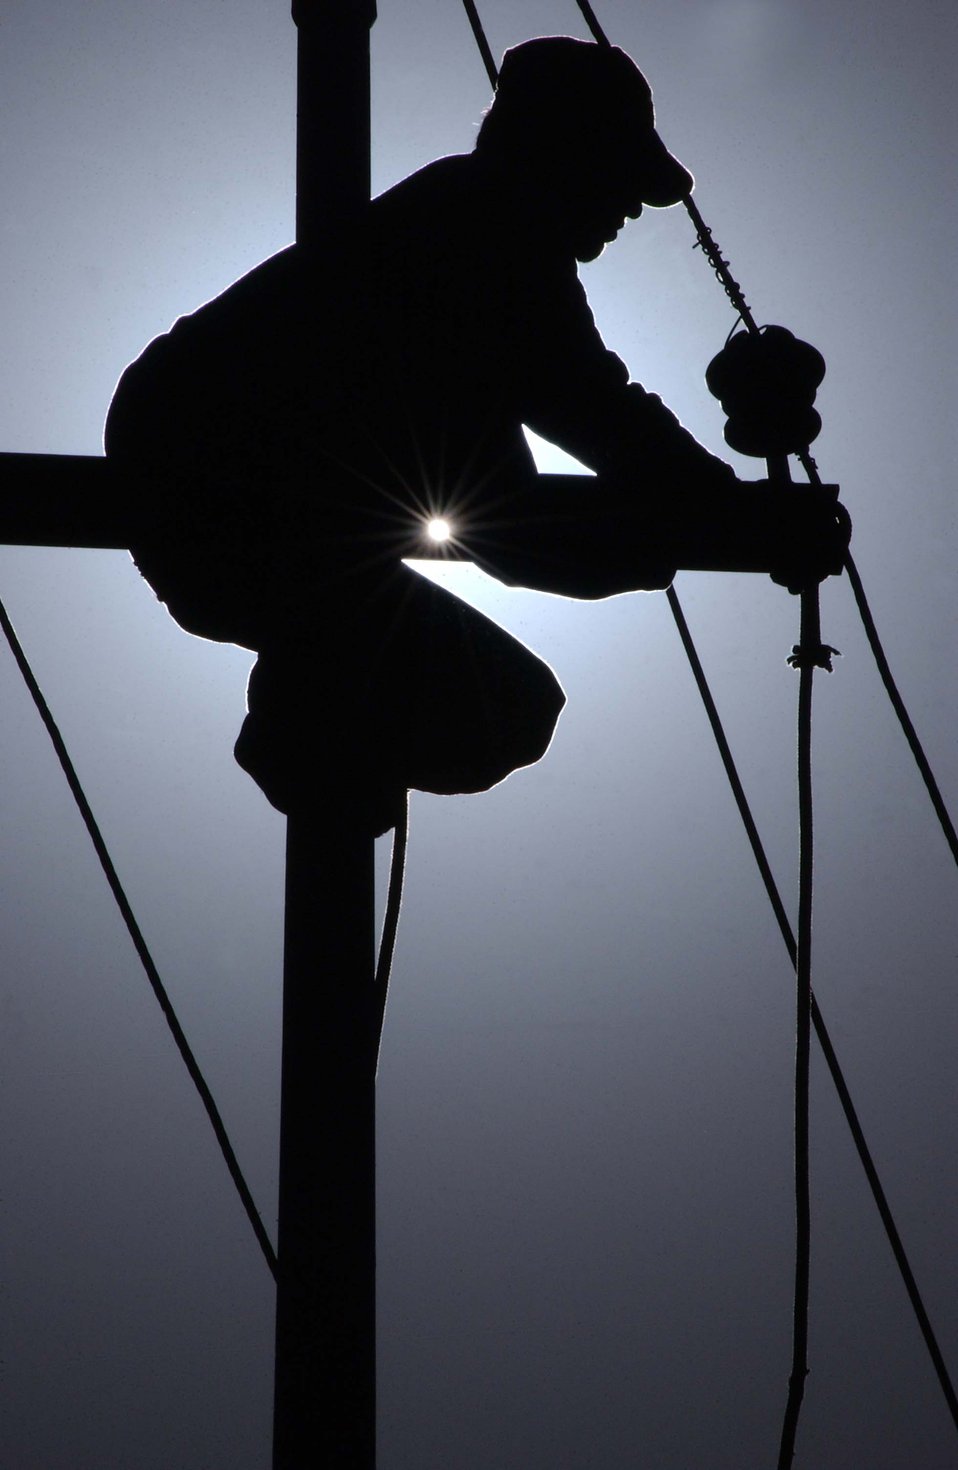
Life on the high wire

KIRKUK, Iraq -- An Iraqi electrician repairs damaged power lines here Sept. 8. Many of the lines were damaged or stolen by looters shortly after the beginning of Operation Iraqi Freedom.